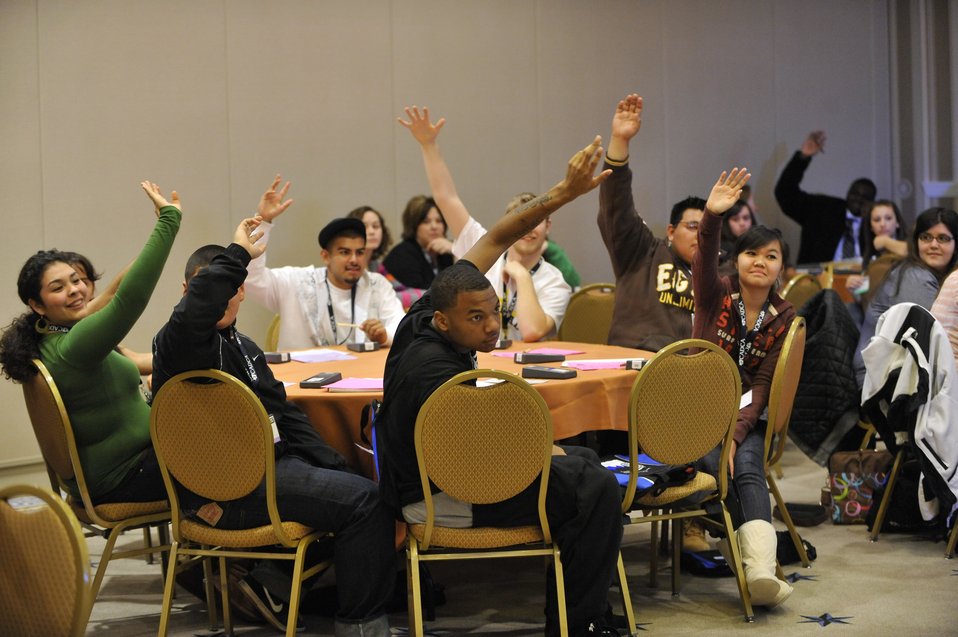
CADCA youth and NIDA answer questions about drugs and drug abuse at CADCA’s National Leadership Forum.